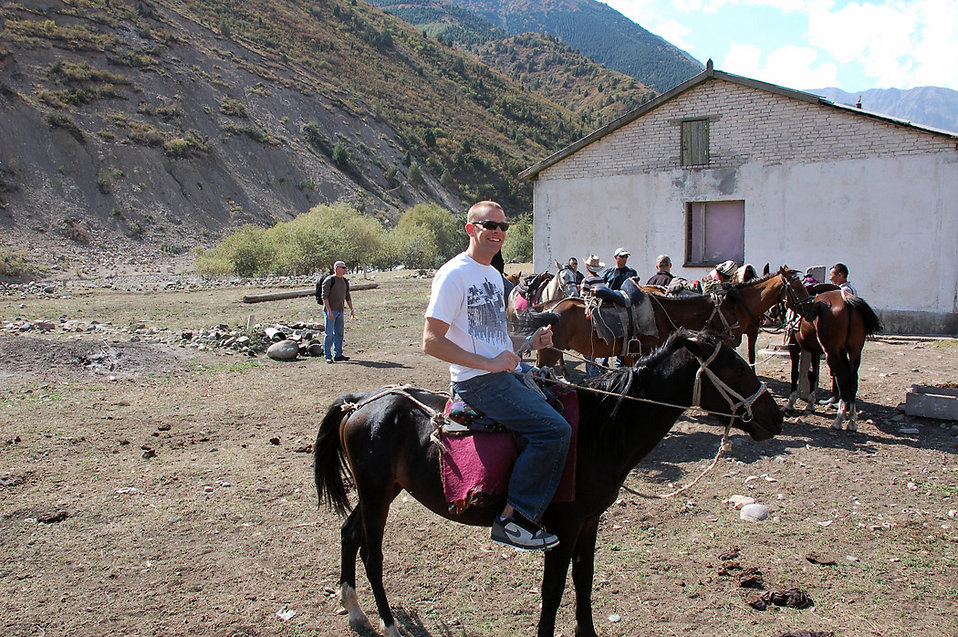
Program strengthens U.S., host-nation relationships

Servicemembers saddle up for a horseback riding trip in the mountains of Kyrgyzstan. The trip was offered by the base International Tours and Travel office. Deployed servicemembers to Manas have an unique opportunity through the base ITT office to frequent more than 40 locations ranging from hiking, horseback and dining trips throughout city of Bishkek and the country.